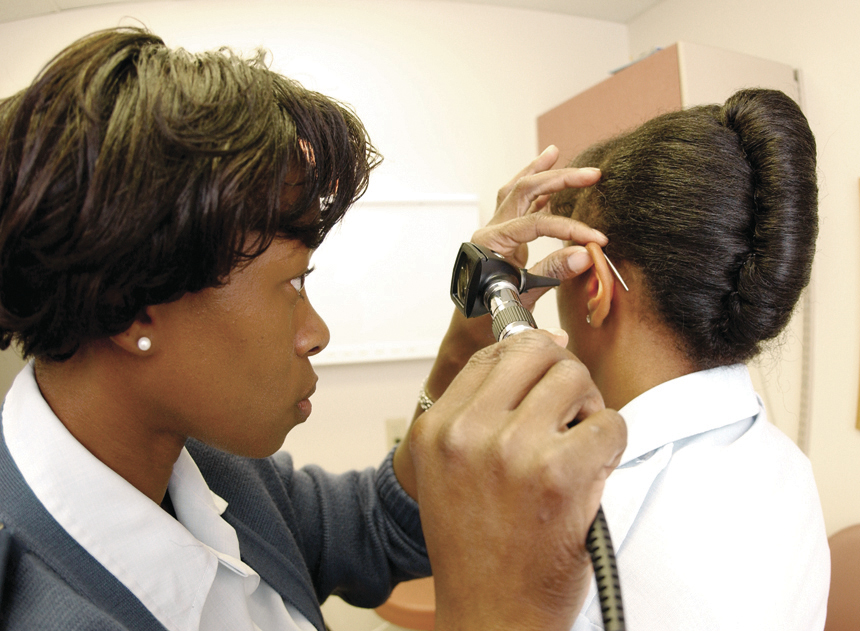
Physician assistants strong support for military medical units

HICKAM AIR FORCE BASE, Hawaii -- Capt. Jacqueline King exams one of the more than 25 patients she sees daily. She is a physician assistant assigned to the 15th Medical Group here.